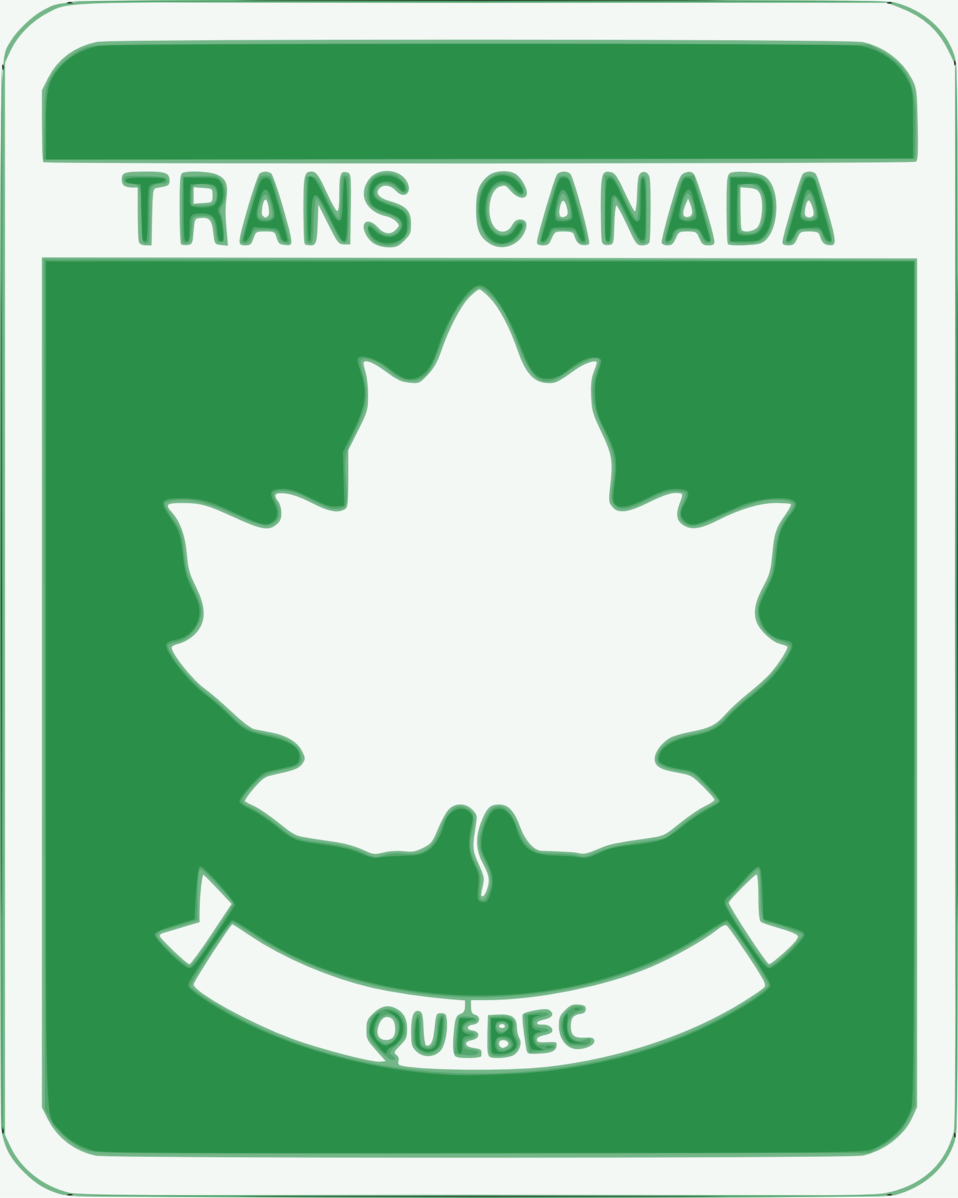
Français : Bouclier de la transcannadienne au Québec.